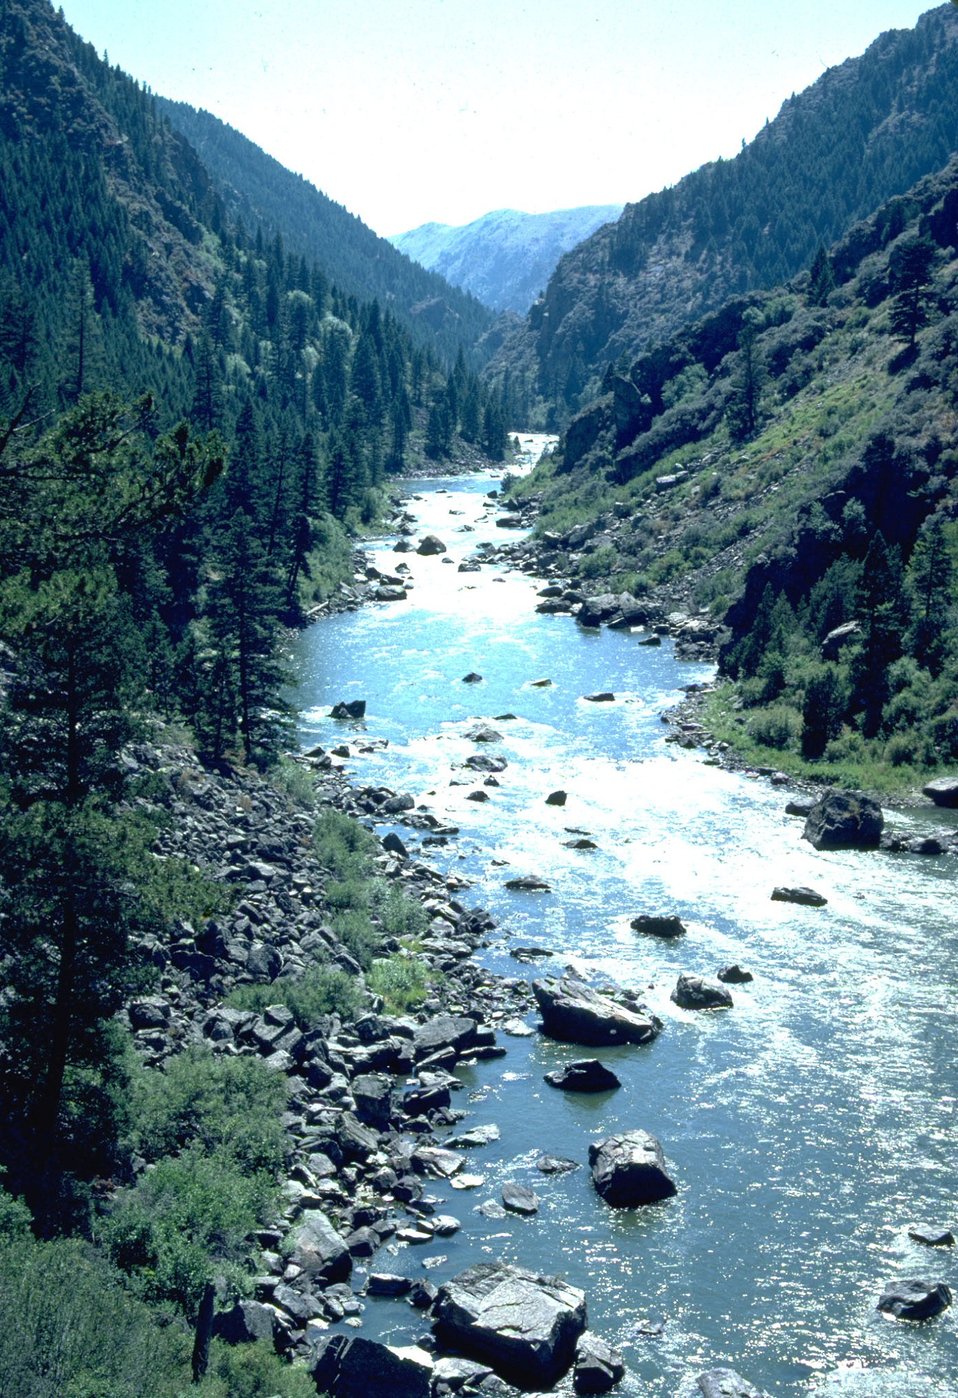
Bear Trap Canyon